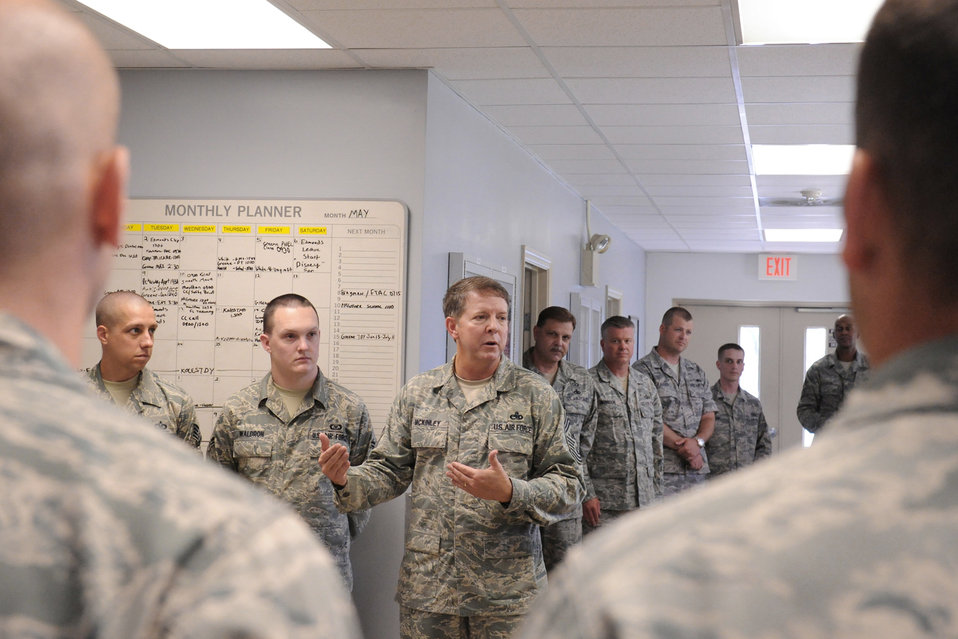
CMSAF visits Seymour Johnson

Chief Master Sgt. of the Air Force Rodney McKinley speaks with Airmen in the aircrew flight equipment building on Seymour Johnson Air Force Base, June 12. Airmen asked about his work in the Pentagon, the Post 9/11 GI Bill and how Seymour Johnson AFB has changed since he was stationed here in the 1970s.